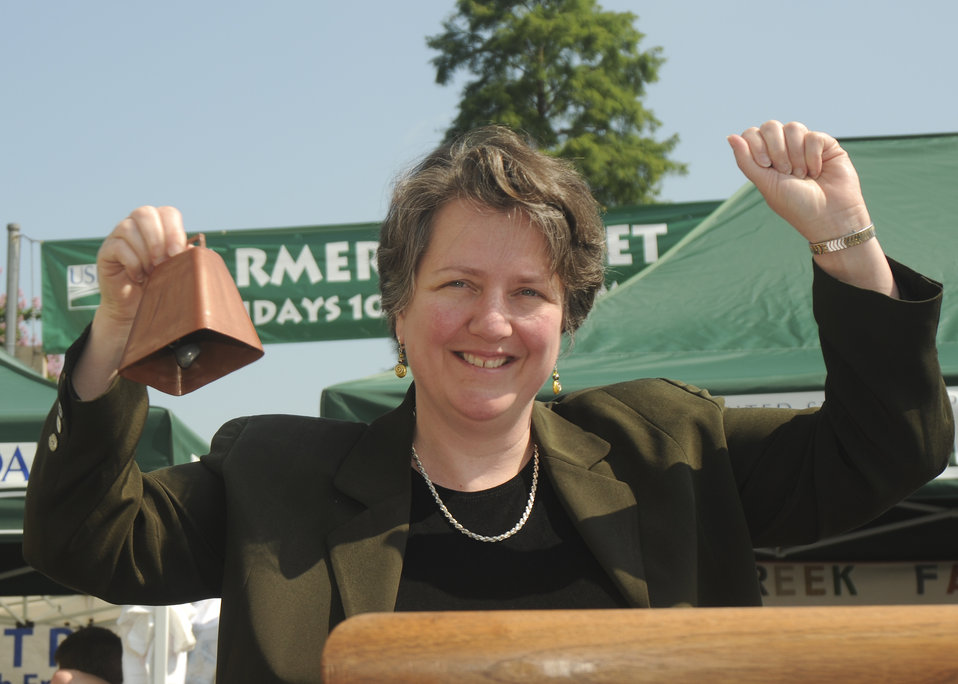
Deputy Secretary of Agriculture Kathleen Merrigan rings the bell opening the 2010 Farmers Market at the U.S. Department of Agriculture in Washington, D.C., on Friday, June 4, 2010. USDA Photo 10di1389-030.